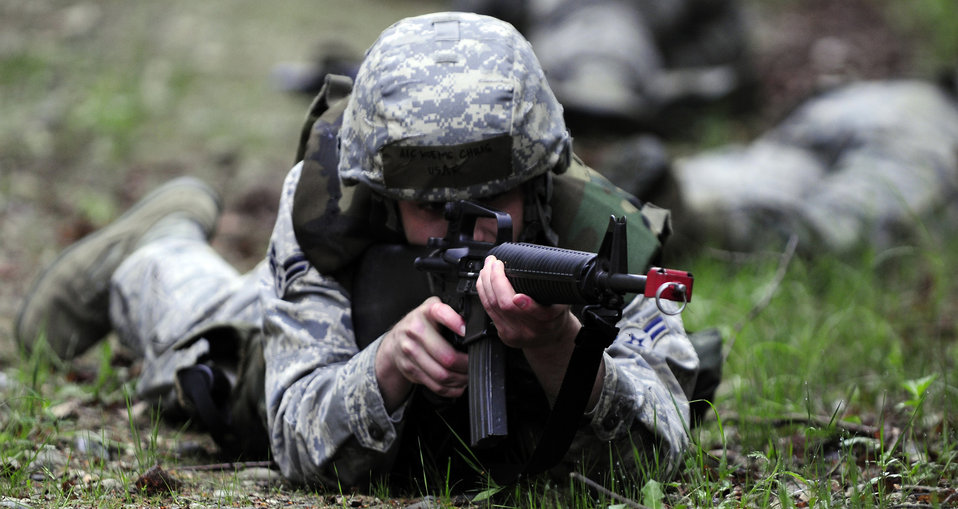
Dismounted patrol preparedness exercise

Airmen 1st Class Chris Koenig